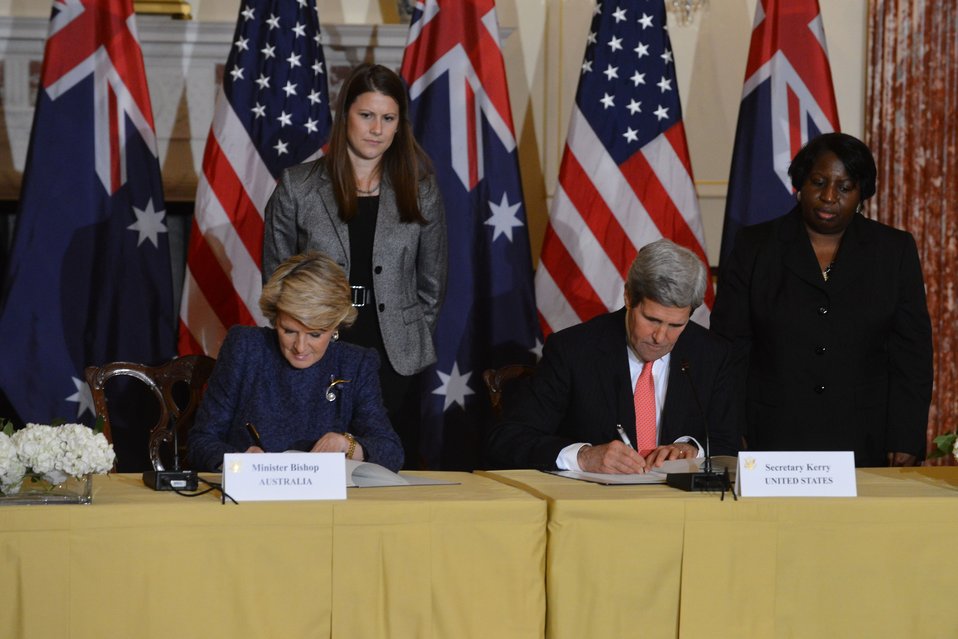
Secretary Kerry and Australian Foreign Minister Bishop Sign a Statement of Principles

U.S. Secretary of State John Kerry, U.S. Secretary of Defense Chuck Hagel, Australian Foreign Minister Julie Bishop, and Australian Defence Minister David Johnston participate in the signing of a Statement of Principles and a joint press conference during the Australia-United States Ministerial Consultations at the U.S. Department of State in Washington, D.C., on November 20, 2013.